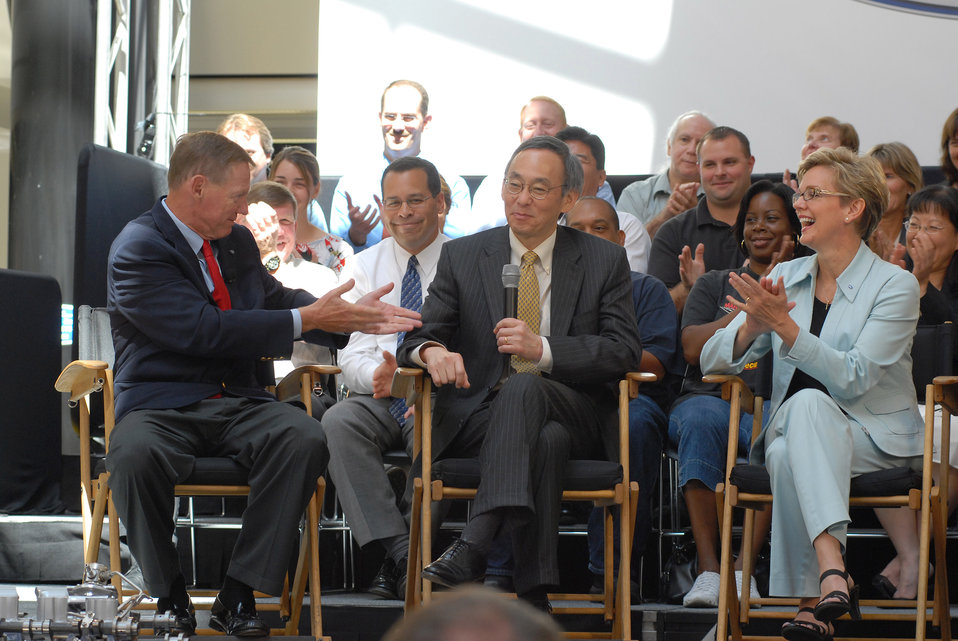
Dearborn Mi., 6-23-09. Today, U.S. Department of Energy Secretary Steven Chu announced that Ford has been approved for the Advanced Technology Vehicles Manufacturing Incentive Program. The loan commitment announced is $5.9 billion. Shown here is Alan Mulally, President and CEO, Ford motor Company, U.S. Department of Energy Secretary, Steven Chu and Michigan Governor Jennifer Granholm taking questions from the Media.